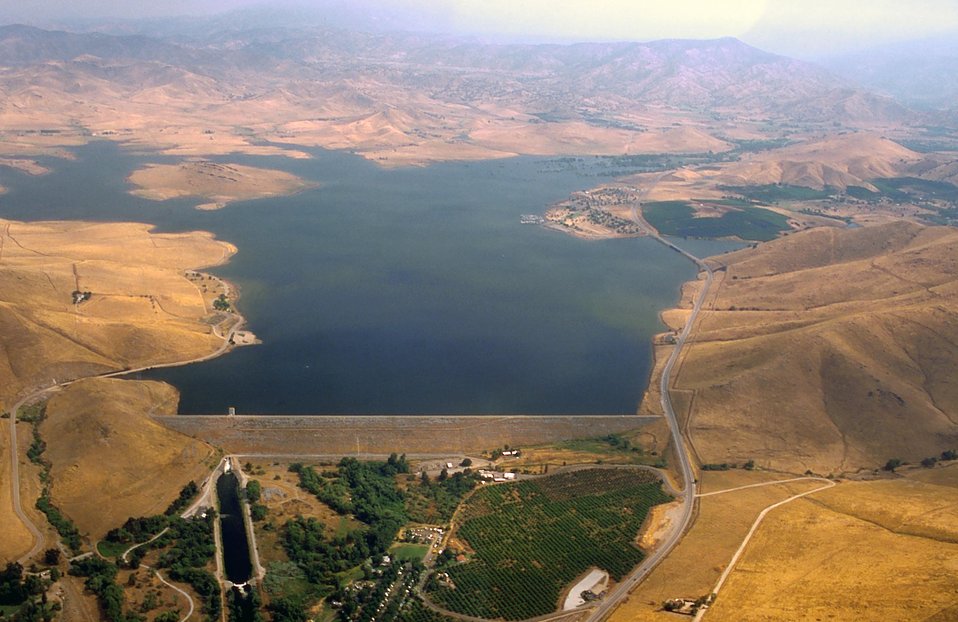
Success Dam

Looking northeast in an aerial view of Success Dam, located near Porterville, Calif., Nov. 8, 2004. The U.S. Army Corps of Engineers Sacramento District completed construction of Success Dam in 1961 and the reservoir provides flood risk management, water storage and recreational benefits to the local area.